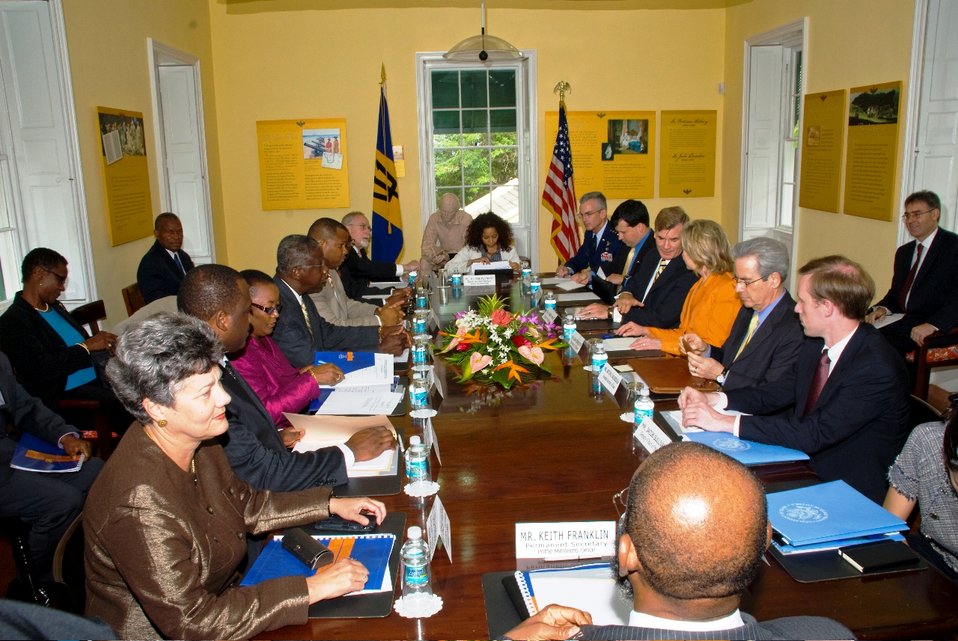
Acting Prime Minister Freundel Stuart Holds Bilateral Meeting With Secretary Clinton

Acting Prime Minister Freundel Stuart holds a bilateral meeting with U.S. Secretary of State Hillary Rodham Clinton in Bridgetown, Barbados, on June 10, 2010.